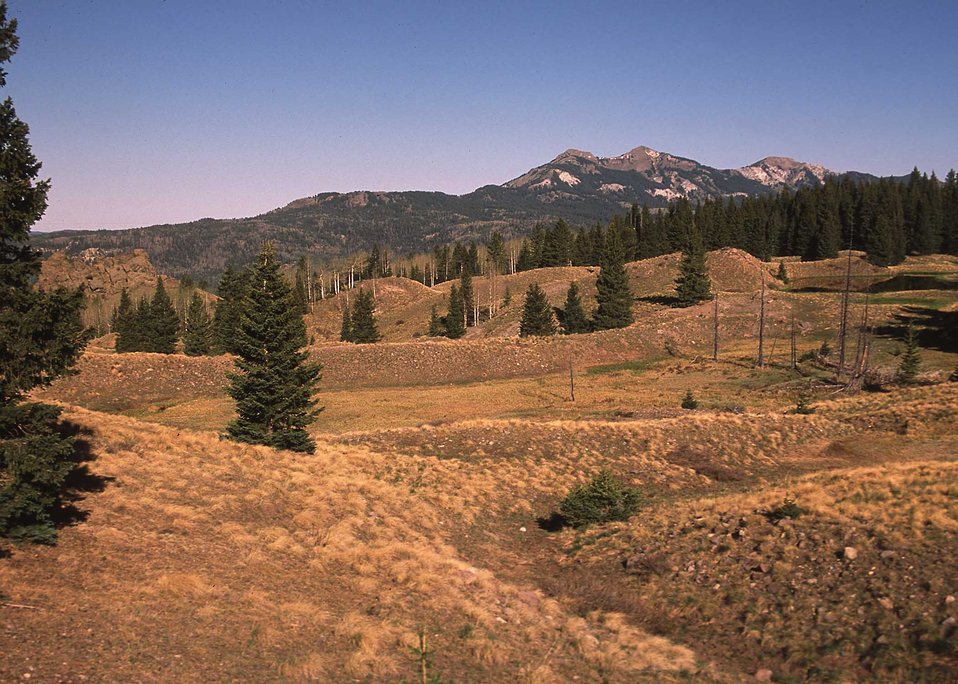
Scenic of an elk ranch which specializes in raising elk for hunting. Chama, New Mexico.